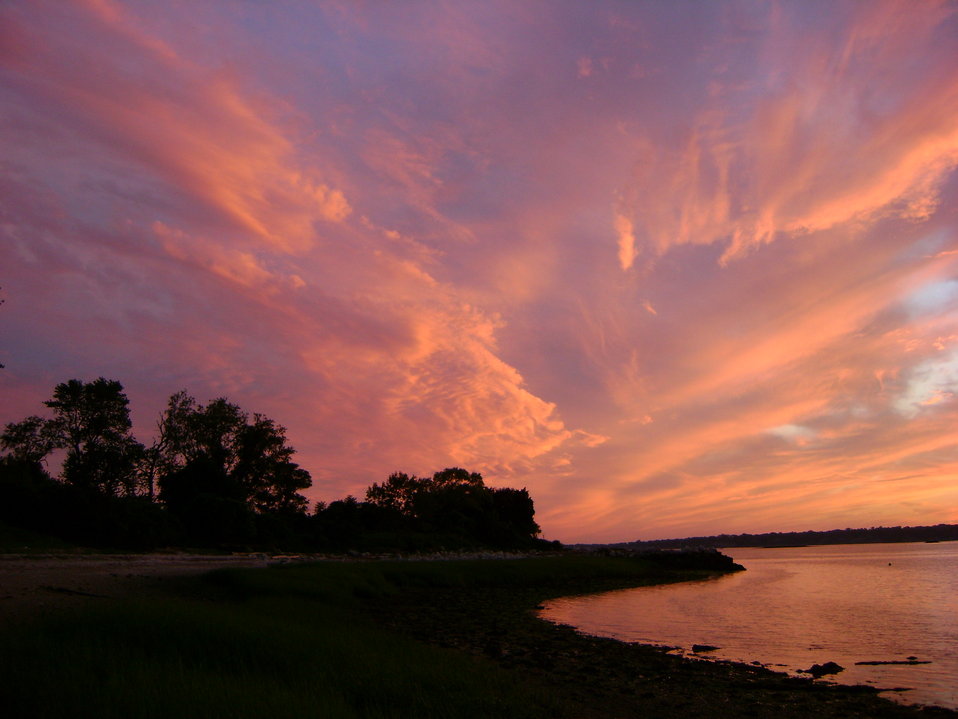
Sunset at Chimon Island

Stewart B. McKinney National Wildlife Refuge, CT.